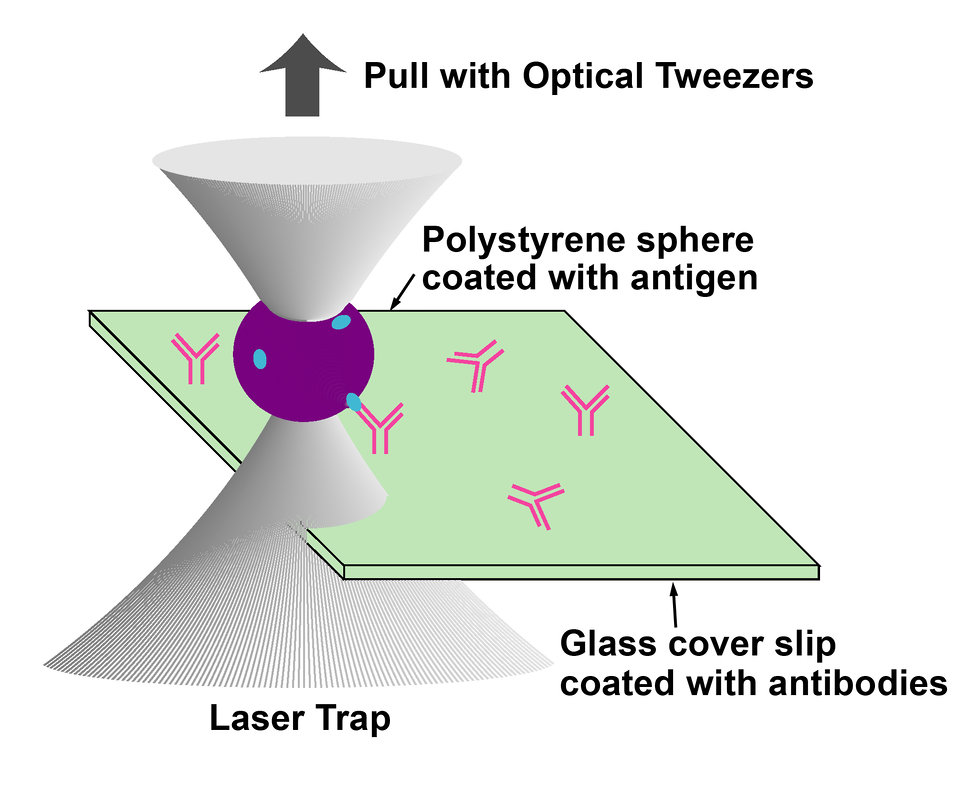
Femtomolar Optical Tweezers

Basic scheme of an optical tweezer-based sensor of biological particles. A microsphere covered with a specific antigen (such as a virus or other infectious agent) is trapped and pulled away from a surface containing the corresponding antibodies. The minimum amount of force applied to the tweezers to break the bonds can provide information on the concentration of antibodies on the surface.